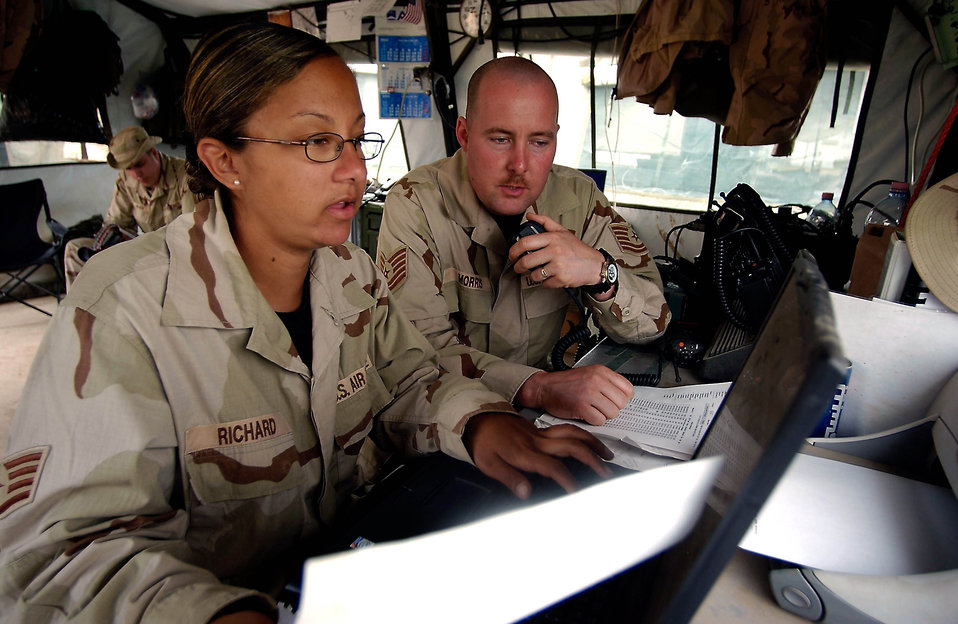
Aerial port ops

OPERATION IRAQI FREEDOM -- Staff Sgt. Marissa Richard, a tanker airlift control element manager, and Tech. Sgt. Jeffrey Morris, a command and control troop -- both with the 86th Expeditionary Air Mobility Squadron -- coordinate an aircraft arrival at Bashur Airfield, Iraq. The squadron, part of the 86th Expeditionary Contingency Control Group, has runs the aerial port operations at the base.